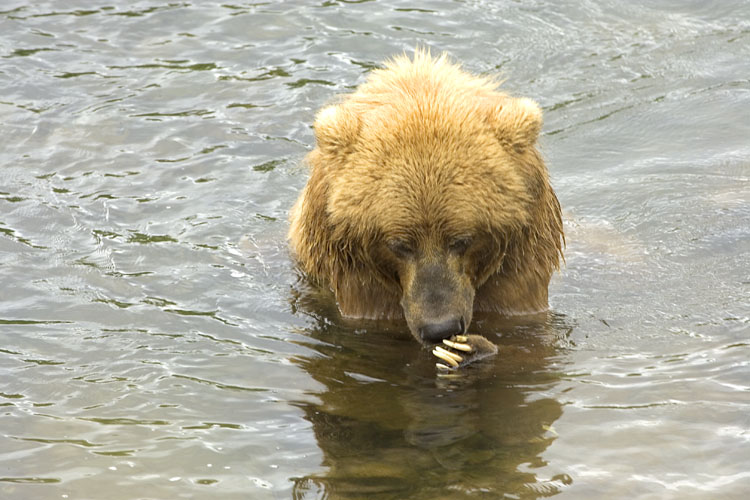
Wildlife of Kodiak Refuge

Kodiak Bear examining claws.